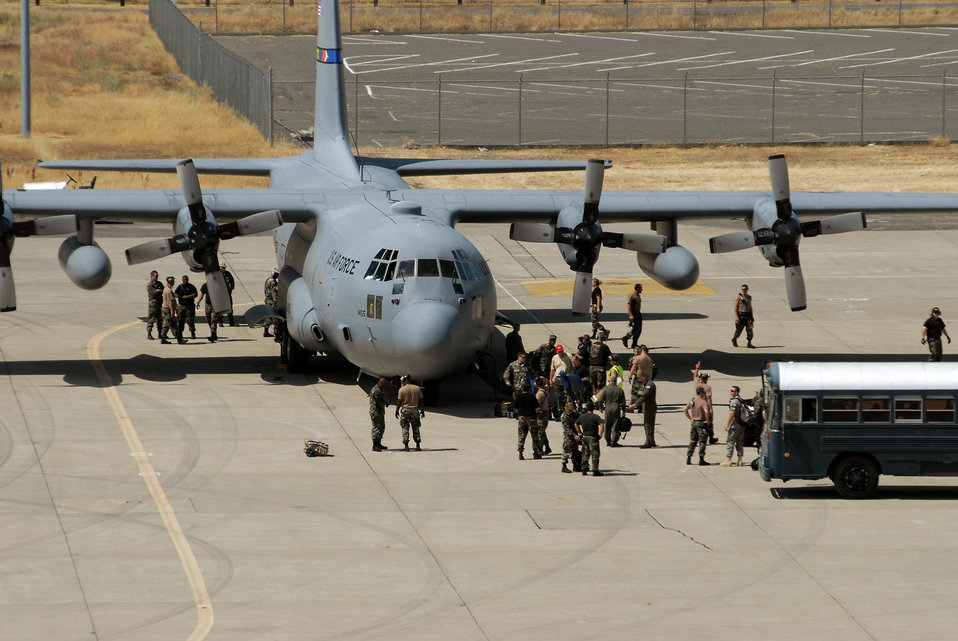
Airmen launch fifth day of California fire support

Airmen prepare a Modular Airborne Firefighting System-equipped C-130 Hercules at to drop flame retardant in support of the northern California wilderness firefight June 30 at McClellan Airfield, Calif.